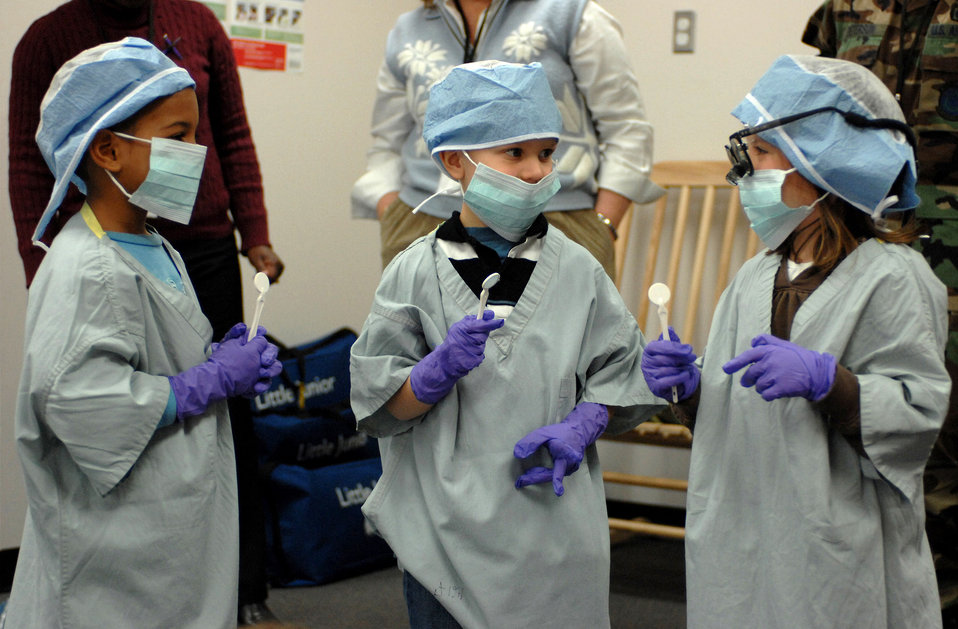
Future drill sergeants

Children dressed up as dentists admire their new look during a health and hygiene presentation Feb. 12 given by 1st Dental Squadron Airmen at the Child Development Center at Langley Air Force Base, Va. The class stressed teeth and mouth cleanliness as well as good eating habits.